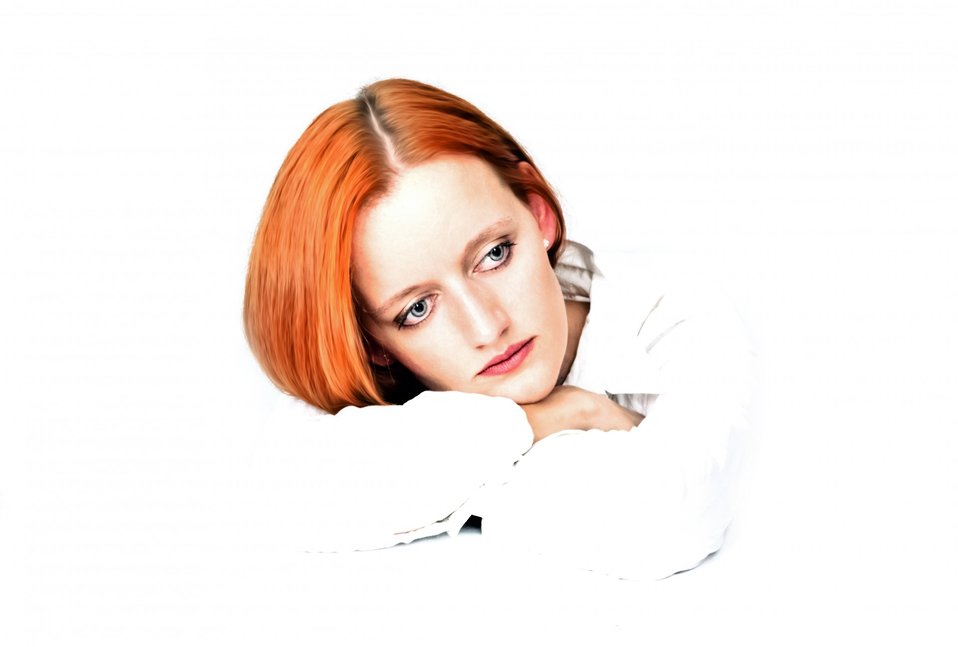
Woman - portrait.